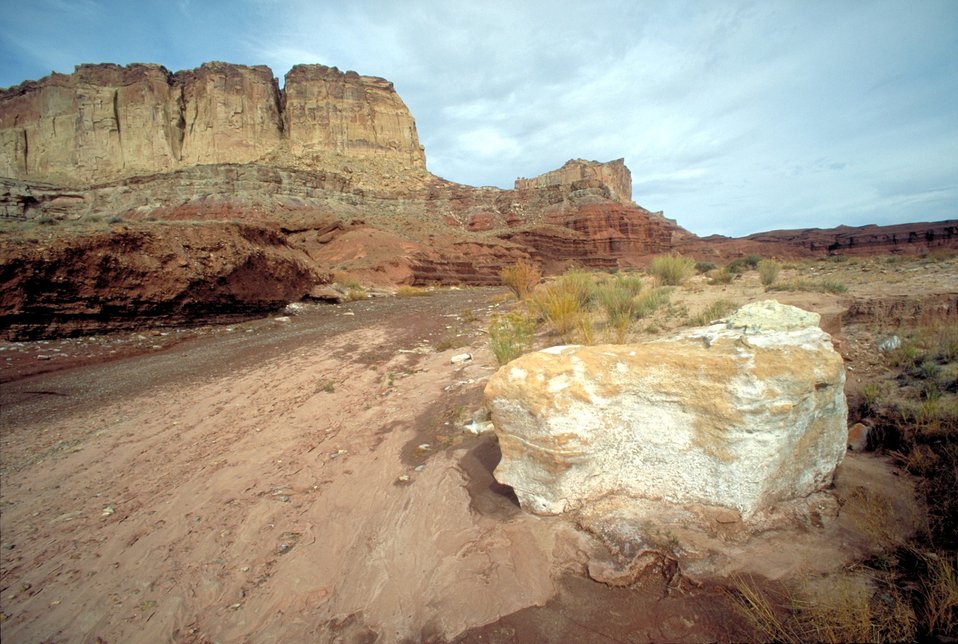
Red Canyon Loop, San Rafael Swell.